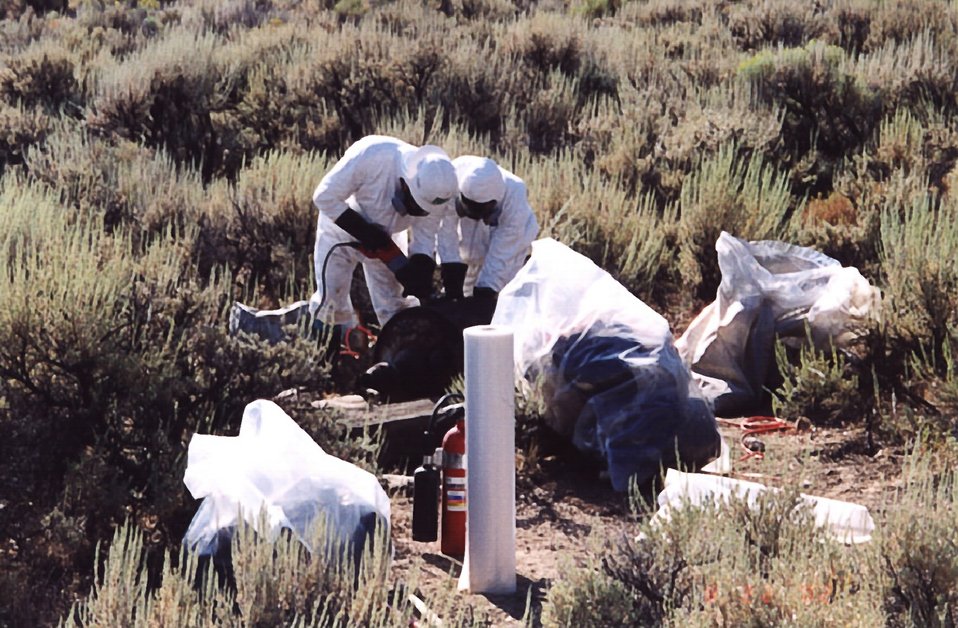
Glass Butte 5 hazmat clean up. Using a sawsall to cut up a retort for bagging. 8/22/02 Photo by Terry Geisler